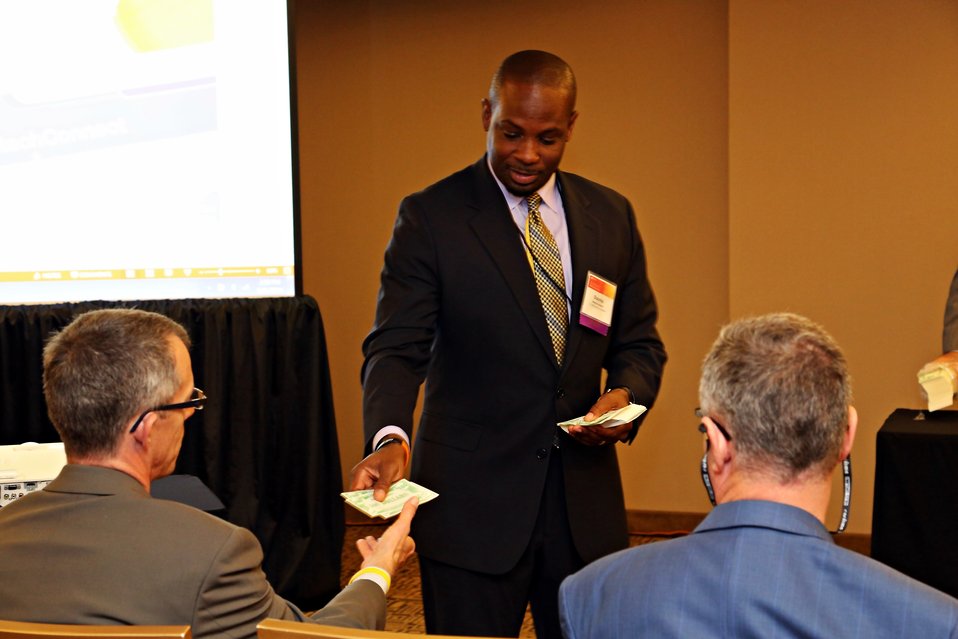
Breakout Sessions 5